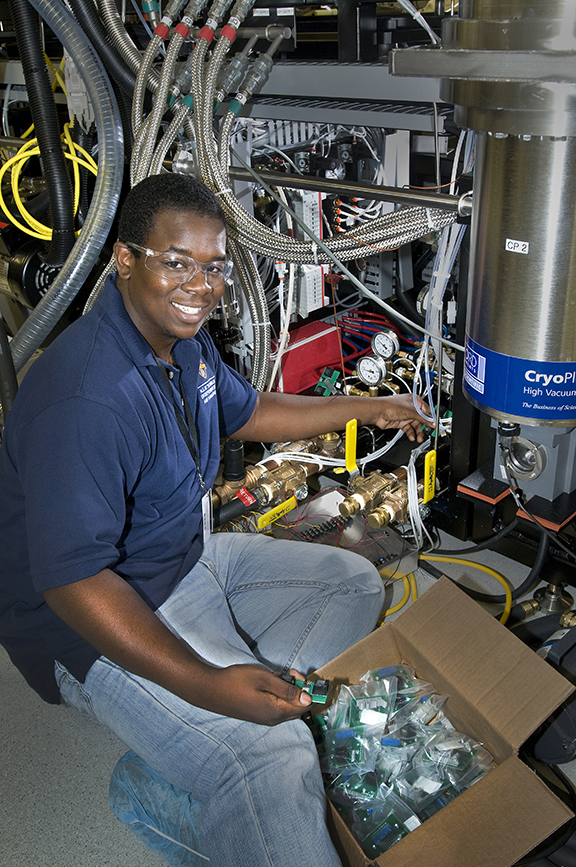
Students get hands-on research experience at Brookhaven National Laboratory's National Synchrotron Light Source.